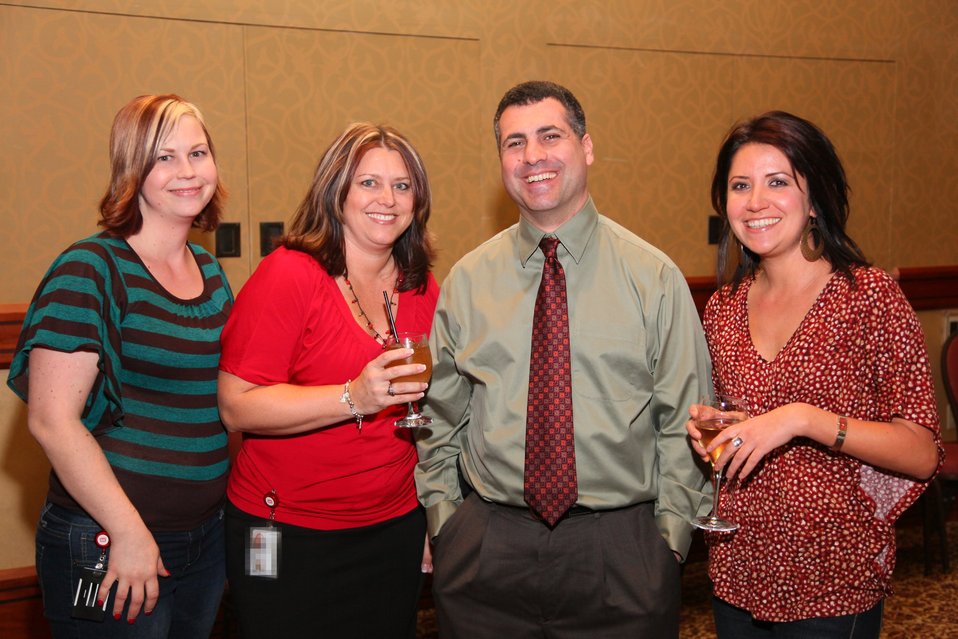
Sacramento District Holiday Party 2011